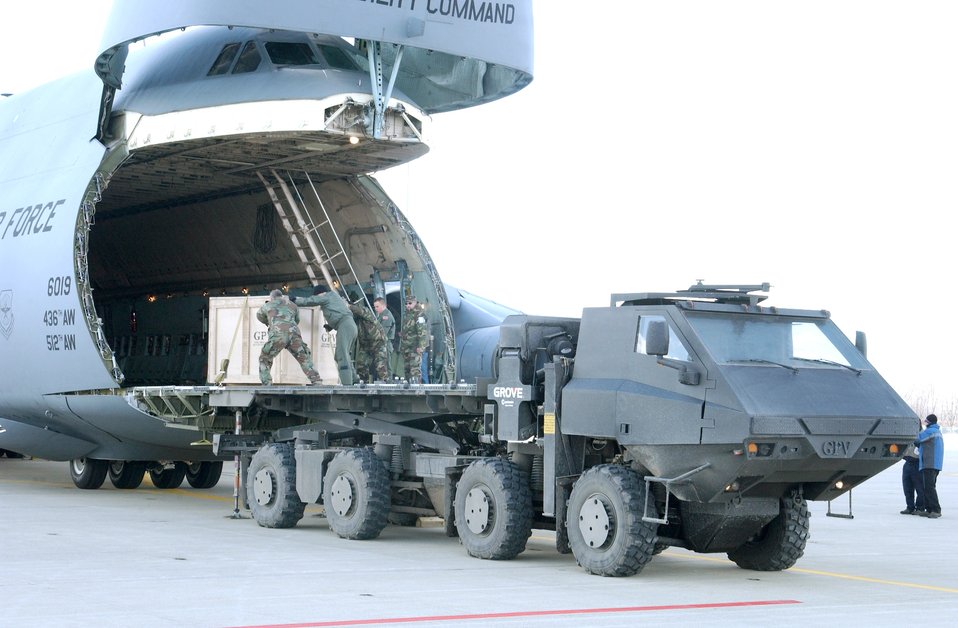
Guard Airmen help drive transformation

SELFRIDGE AIR NATIONAL GUARD BASE, Mich. -- A C-5 Galaxy undergoes loading and unloading trials with the Army's prototype general purpose vehicle here. The exercise follows earlier tests of the vehicle on a C-130 Hercules from the 171st Airlift Squadron based here. The C-5 is from Dover Air Force Base, Del., with a mixed crew of active-duty and Reserve Airmen.